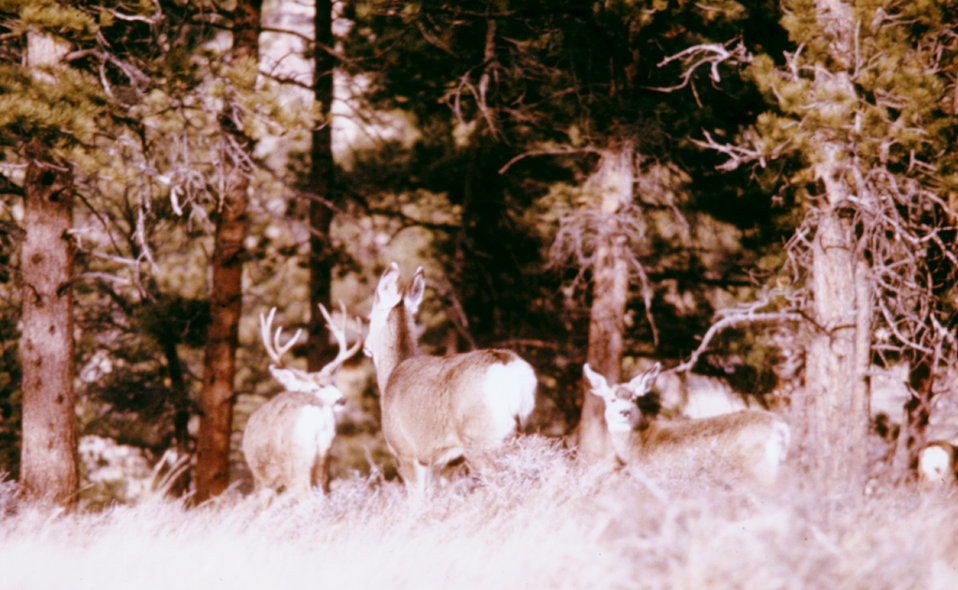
These are mule deer, Odocoileus hemionus, the major host of the adult winter ticks, Dermacentor albipictus.